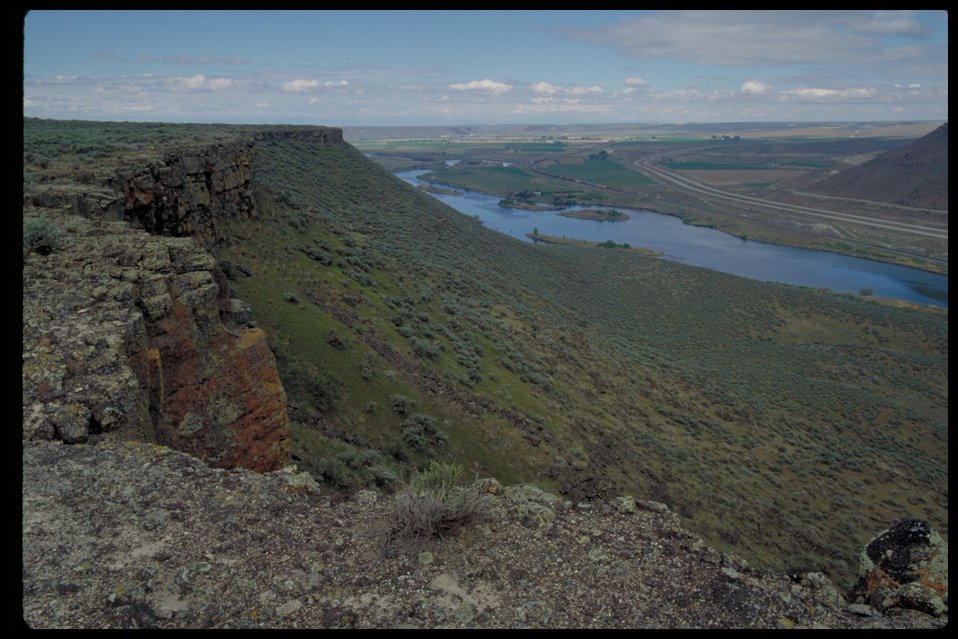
The Narrows Oregon Trail Lower Snake River District